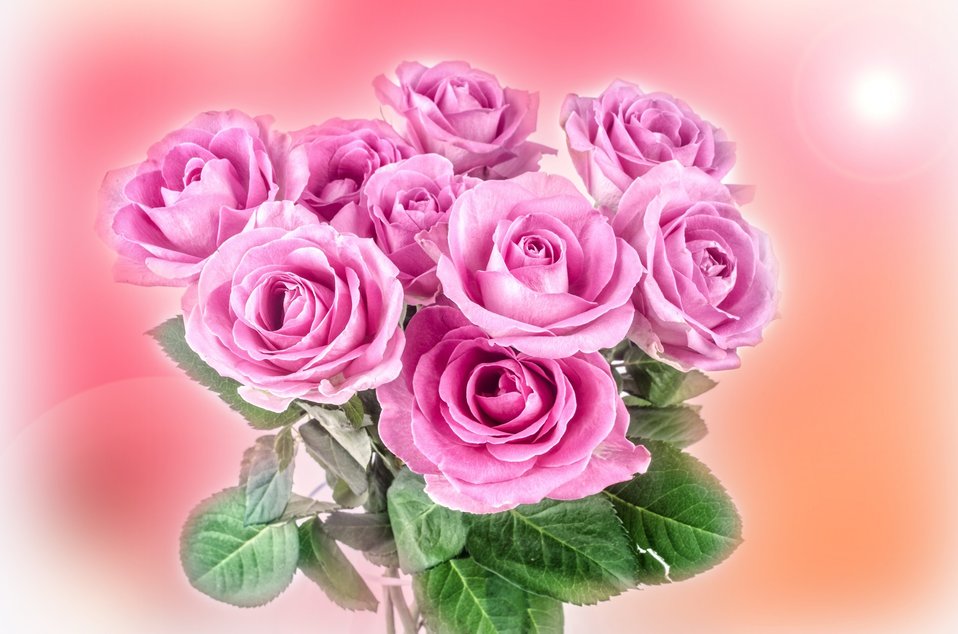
Flowers, pink roses.